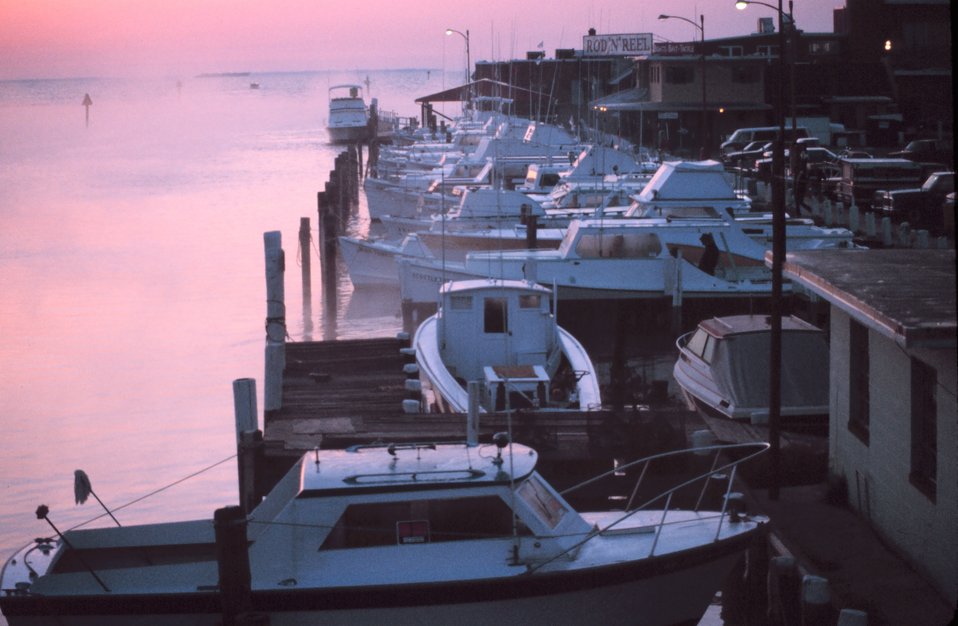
Dawn at Fishing Creek looking out towards the Chesapeake Bay. Advection fog and a small fleet of small charter boats at dock.